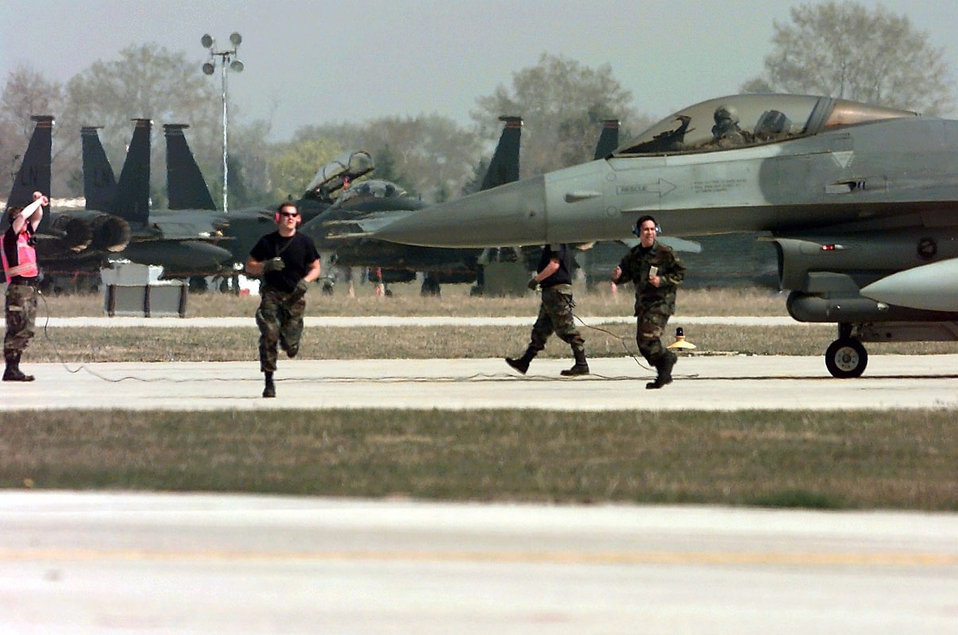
Scramble

FILE PHOTO -- Weapons loaders from the 555th Fighter Squadron, Aviano Air Base, Italy, prepare to launch their F-16 Fighting Falcons for a NATO Operation Allied Force mission, April 3, 1999. The F-16 is a compact, multirole fighter aircraft. It is highly maneuverable and has proven itself in air-to-air combat and air-to-surface attack. It provides a relatively low-cost, high-performance weapon system for the United States and allied nations.